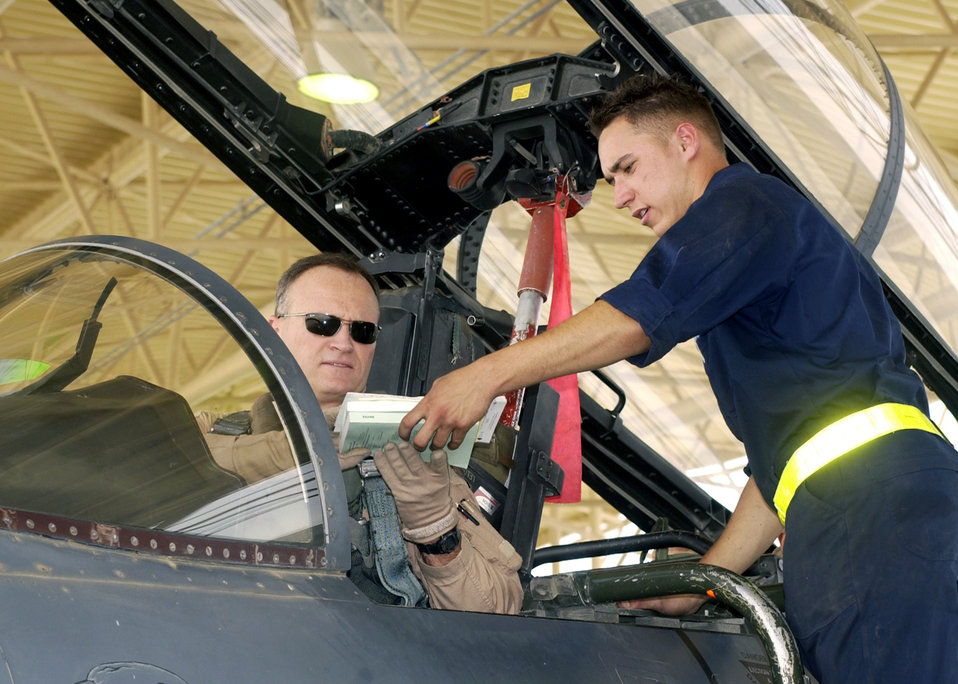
Preparing to strike

SOUTHWEST ASIA -- Col. James Brown receives in-flight publications from Senior Airman Jarek Rostkowski at a forward-deployed location. Colonel Brown is the 379th Expeditionary Operations Group commander. Airman Rostkowski is assigned to the 379th Air Expeditionary Wing and is deployed from Royal Air Force Lakenheath, England.